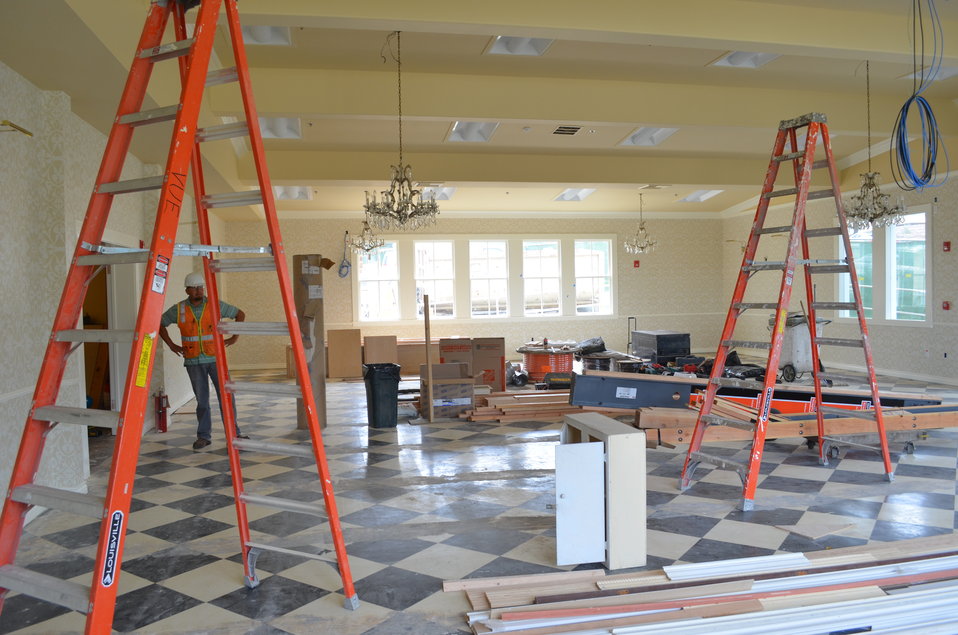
Corps manages vital projects at Presidio

The interior of the cultural center undergoes renovations at the Presidio of Monterey in Monterey, Calif., May 8, 2014. The cultural center is one of several major construction projects at the Presidio managed by the U.S. Army Corps of Engineers Sacramento District and is scheduled to be complete August 2014. The program incorporates the latest energy and water conservation technologies in order to operate more efficiently and in a sustainable, environmentally friendly manner.